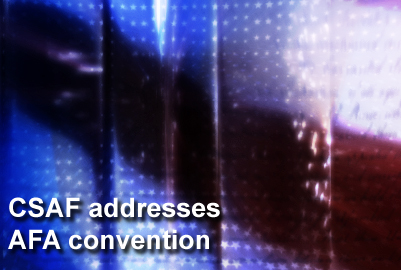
CSAF addresses AFA convention

Air Force Chief of Staff Gen. Norton Schwartz presented his keynote address Sept. 15, 2009, at the Air Force Association's Air & Space Conference and Technology Exposition.